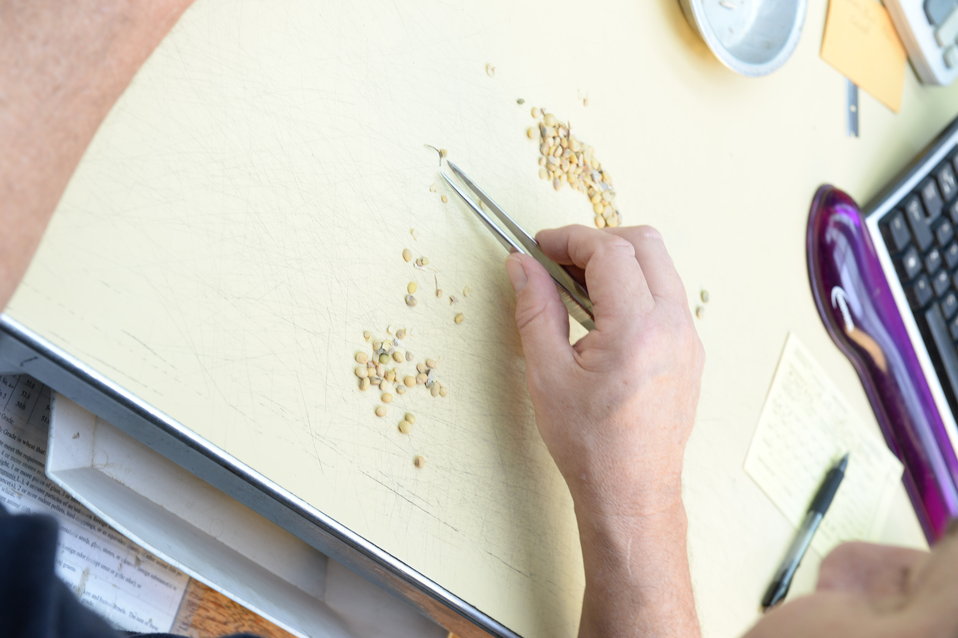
U.S. Department of Agriculture (USDA) Grain Inspection, Packers and Stockyards Administration (GIPSA) Federal Grain Inspection Service (FGIS) employee examines grain samples at the FGIS inspection laboratory in New Orleans, LA on Monday, Nov. 18, 2013.